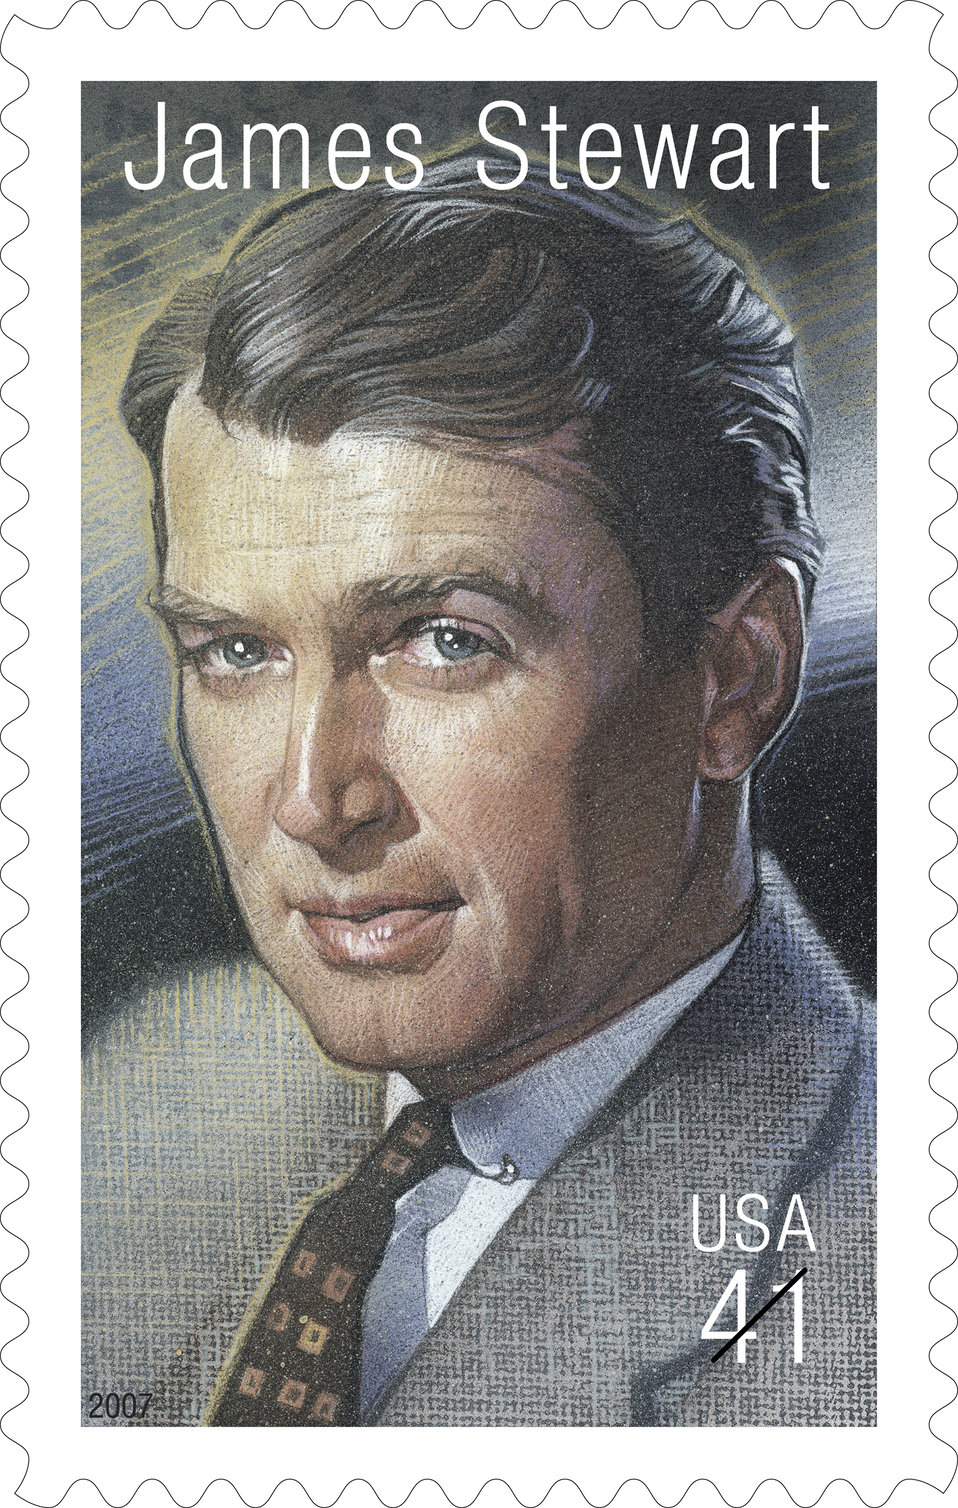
Stamp commemorates James Stewart

Jimmy Stewart starred in 80 films and served in the Air Force and Air Force Reserve for 27 years. The U.S. Postal Service pays tribute to him with its 13th stamp in the